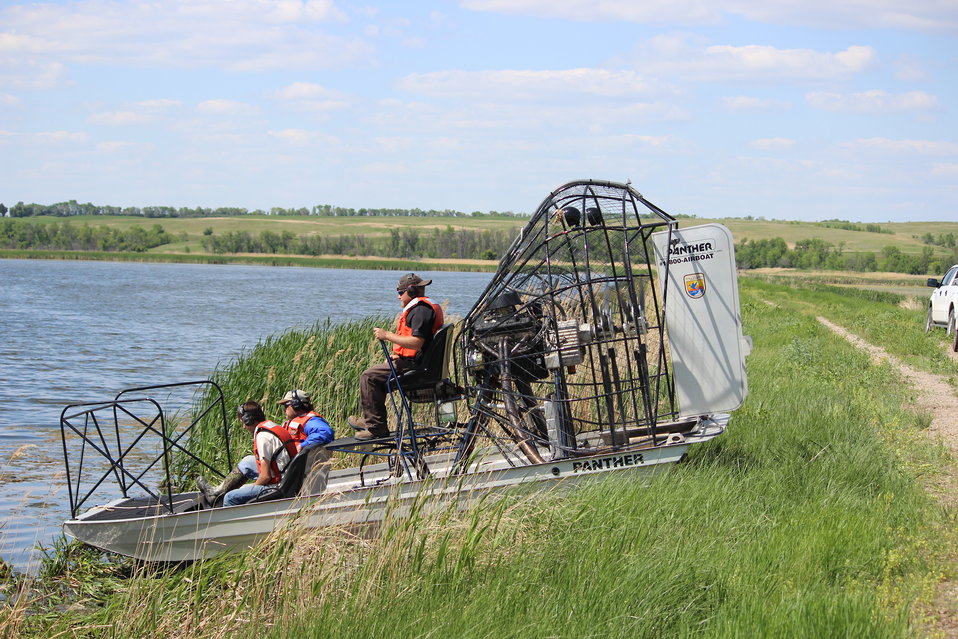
Entering the Water

A Motorboat and Airboat Safety Training was recently held at the Upper Souris National Wildlife Refuge in North Dakota. Students received classroom training as well as field training in the use of personal flotation devices (PFDs), various motorized boats, trailers, and airboats. Students had to pass both a written exam and a practical exam where both safety and skills were demonstrated while running set up courses.